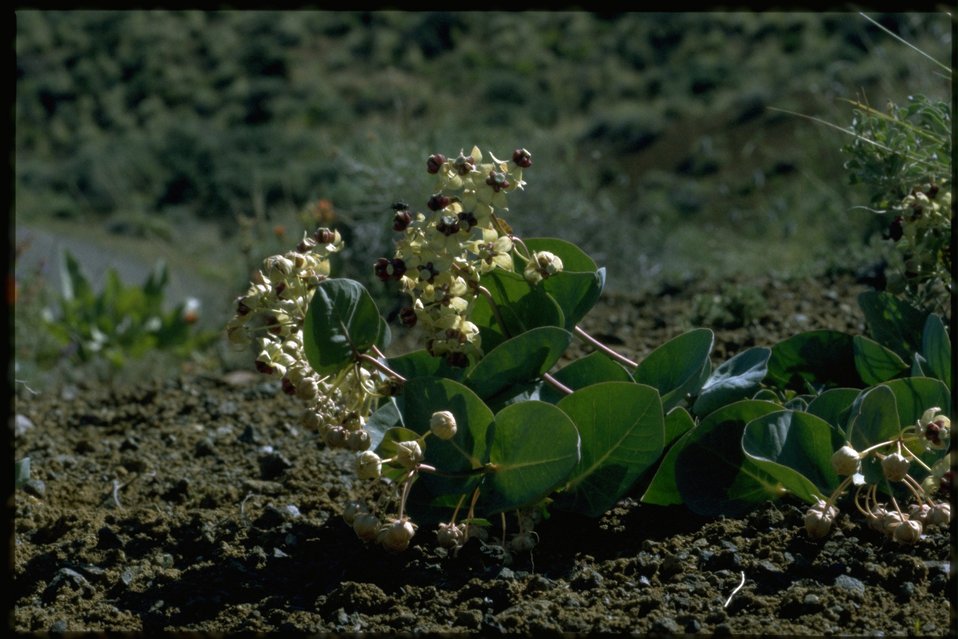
Farshot of Asclepias cordifolia.